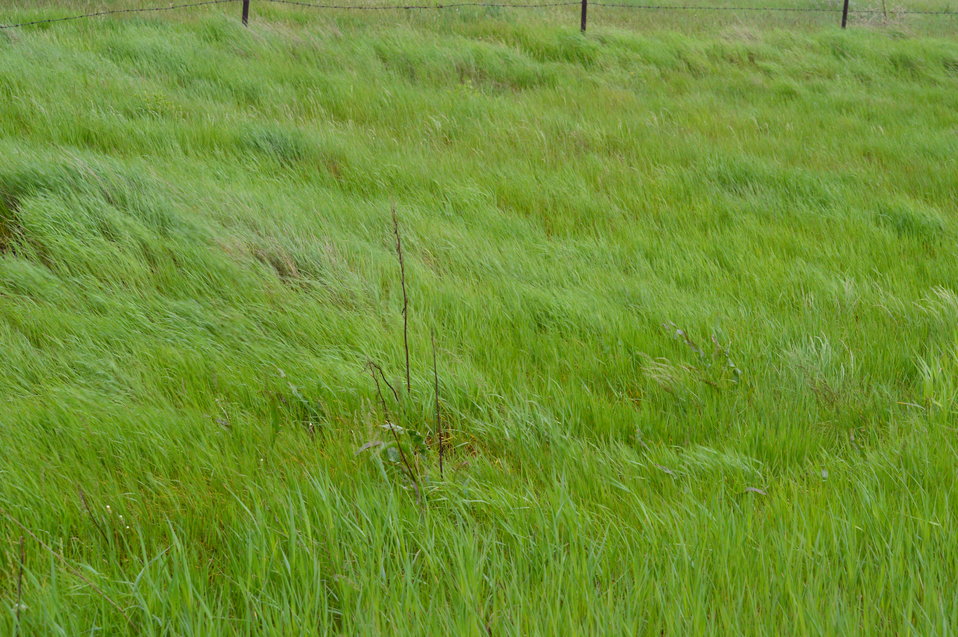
Grass Moving in the Wind

Scenery and wildlife at Lake Ilo National Wildlife Refuge in North Dakota